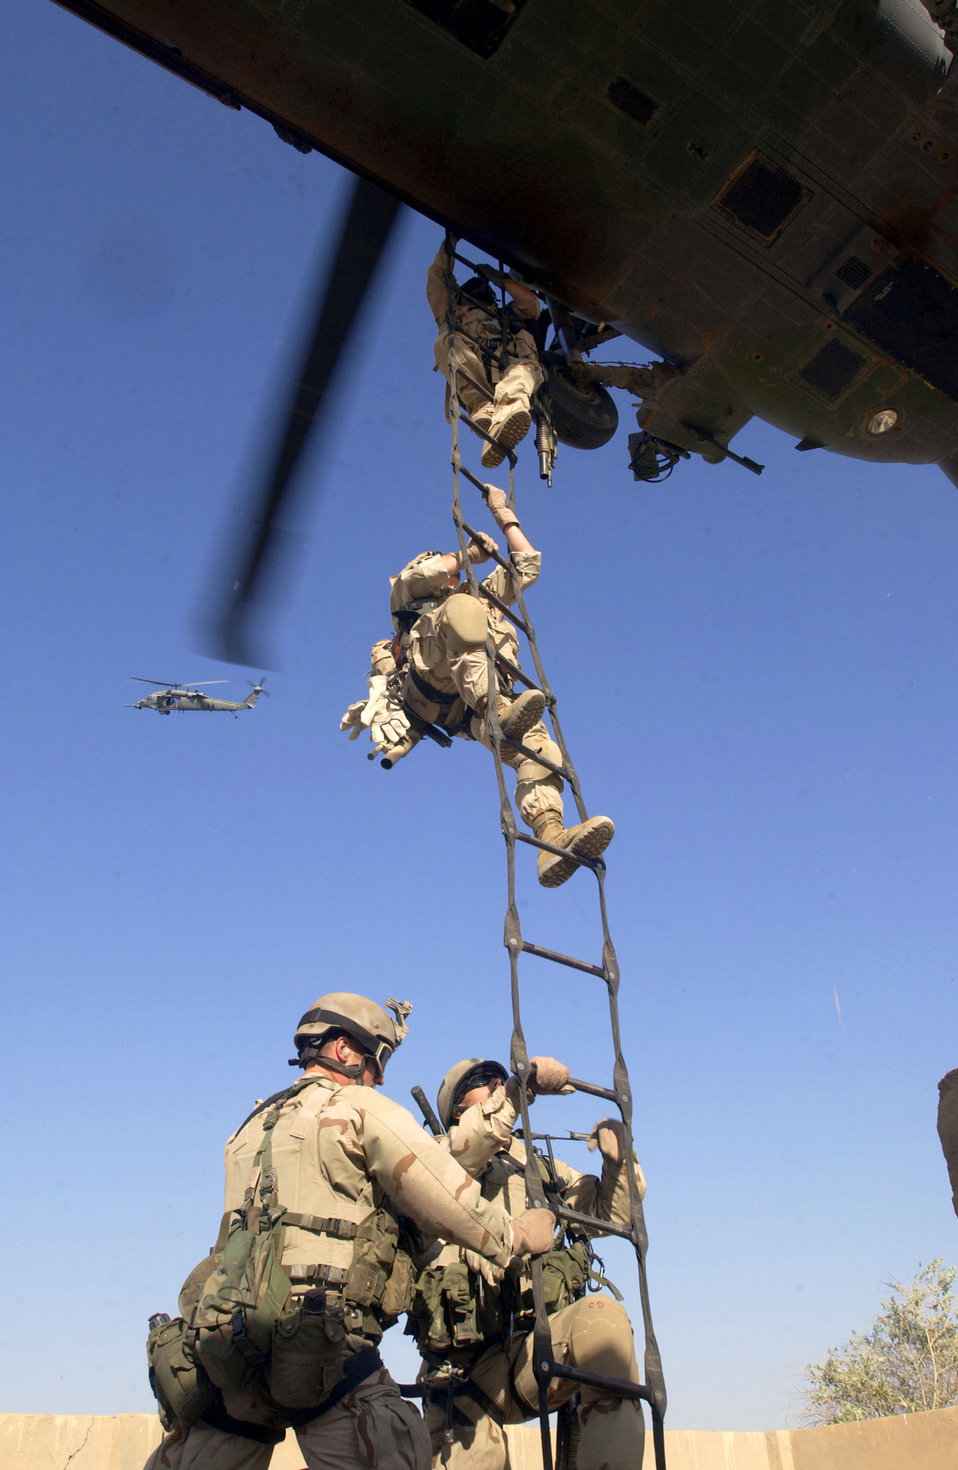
Up we go

OPERATION IRAQI FREEDOM -- Air Force Reserve pararescuemen perform a ladder extraction exercise from an HH-60G Pave Hawk helicopter. Members of the 304th Rescue Squadron, Portland International Airport, Oregon are deployed to Baghdad International Airport in support of Operation Iraqi Freedom.